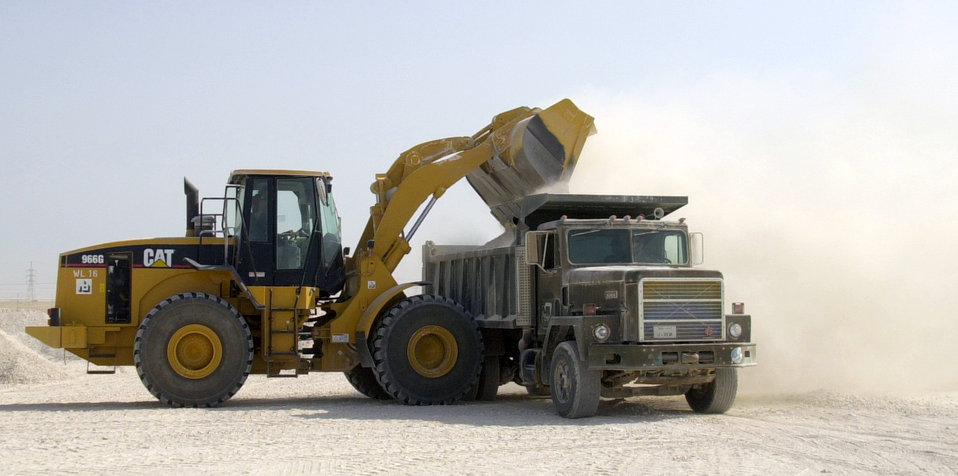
Horsing around

SOUTHWEST ASIA - Senior Airman Jason Johnsen, a pavement and equipment journeyman from the 1st Expeditionary Red Horse Group, dumps gravel from a front-end loader into a dump truck. The group is building facilities and putting in roads at a forward-deployed location.